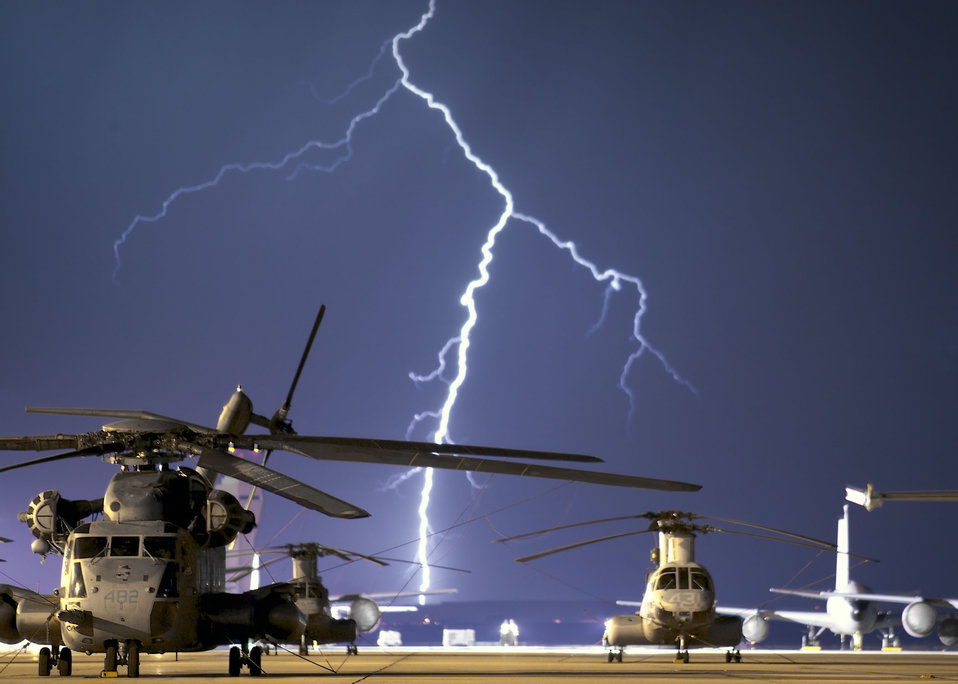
Lightning fast

EDWARDS AIR FORCE BASE, Calif. -- Lightning strikes on the horizon behind the flightline here during a thunderstorm Sept. 3. During the storm, power in some areas of the base was interrupted for a few minutes.